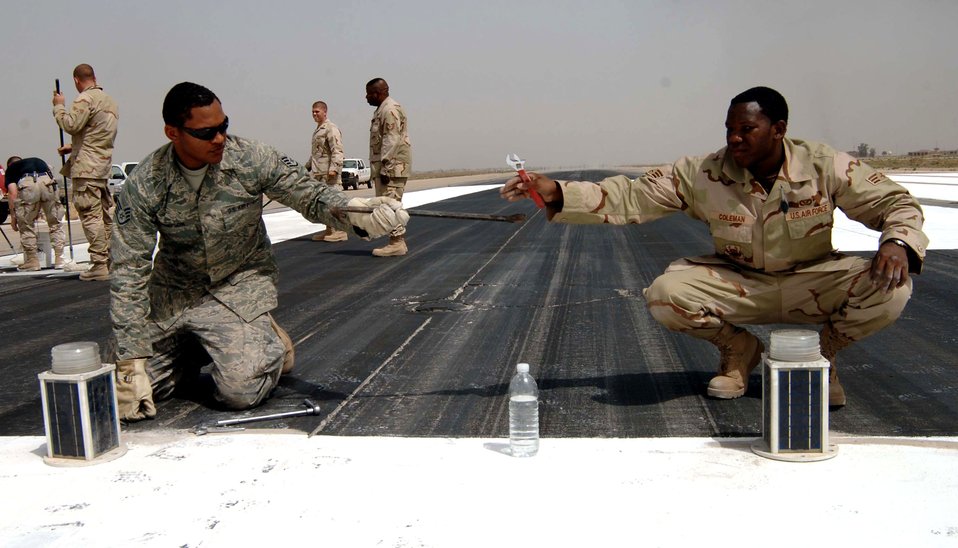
Drawing a line in the desert

Staff Sgt. Charles Thompson (left) and Senior Airman Tremelle Coleman work together to install threshold lights on the Baghdad International Airport runway May 30 in Iraq. These threshold lights are being installed temporarily to shorten the runway by 3,000 feet so repairs can be made. Sergeant Thompson and Airman Coleman are 447th Expeditionary Civil Engineer Squadron electricians.